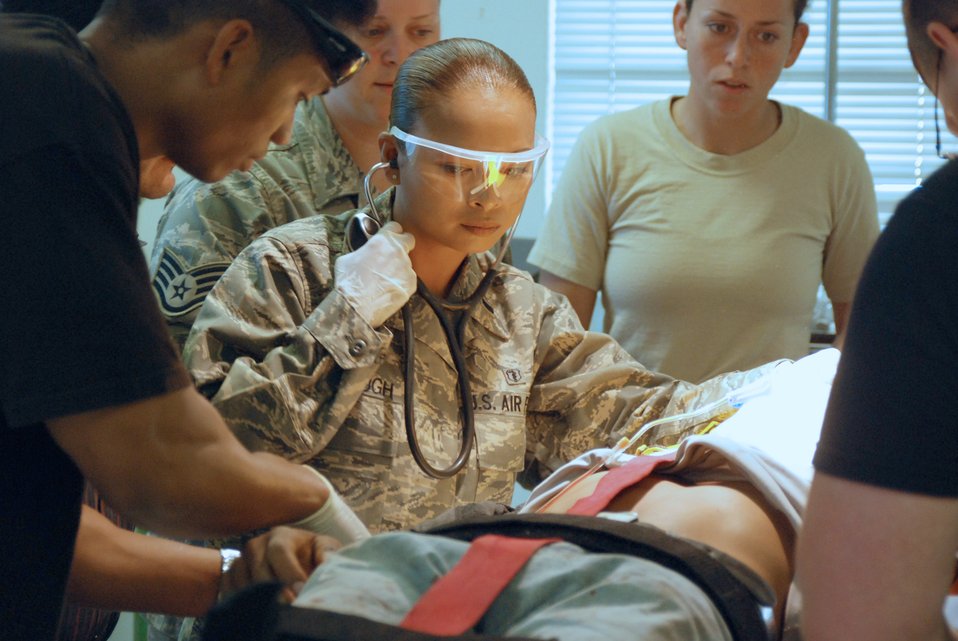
Servicemembers assist in Honduran medical emergency

1st Lt. Jasmin Furlough ensures an accident victim is stabilized in preparation for medical airlift Feb. 26 from Soto Cano Air Base, Honduras, to Tegucigalpa, Honduras. JTF-Bravo Medical Element staff members responded when asked for assistance by a local civilian hospital after 30 people were injured in a roll-over accident. Lieutenant Furlough is a Joint Task Force-Bravo physician assistant.